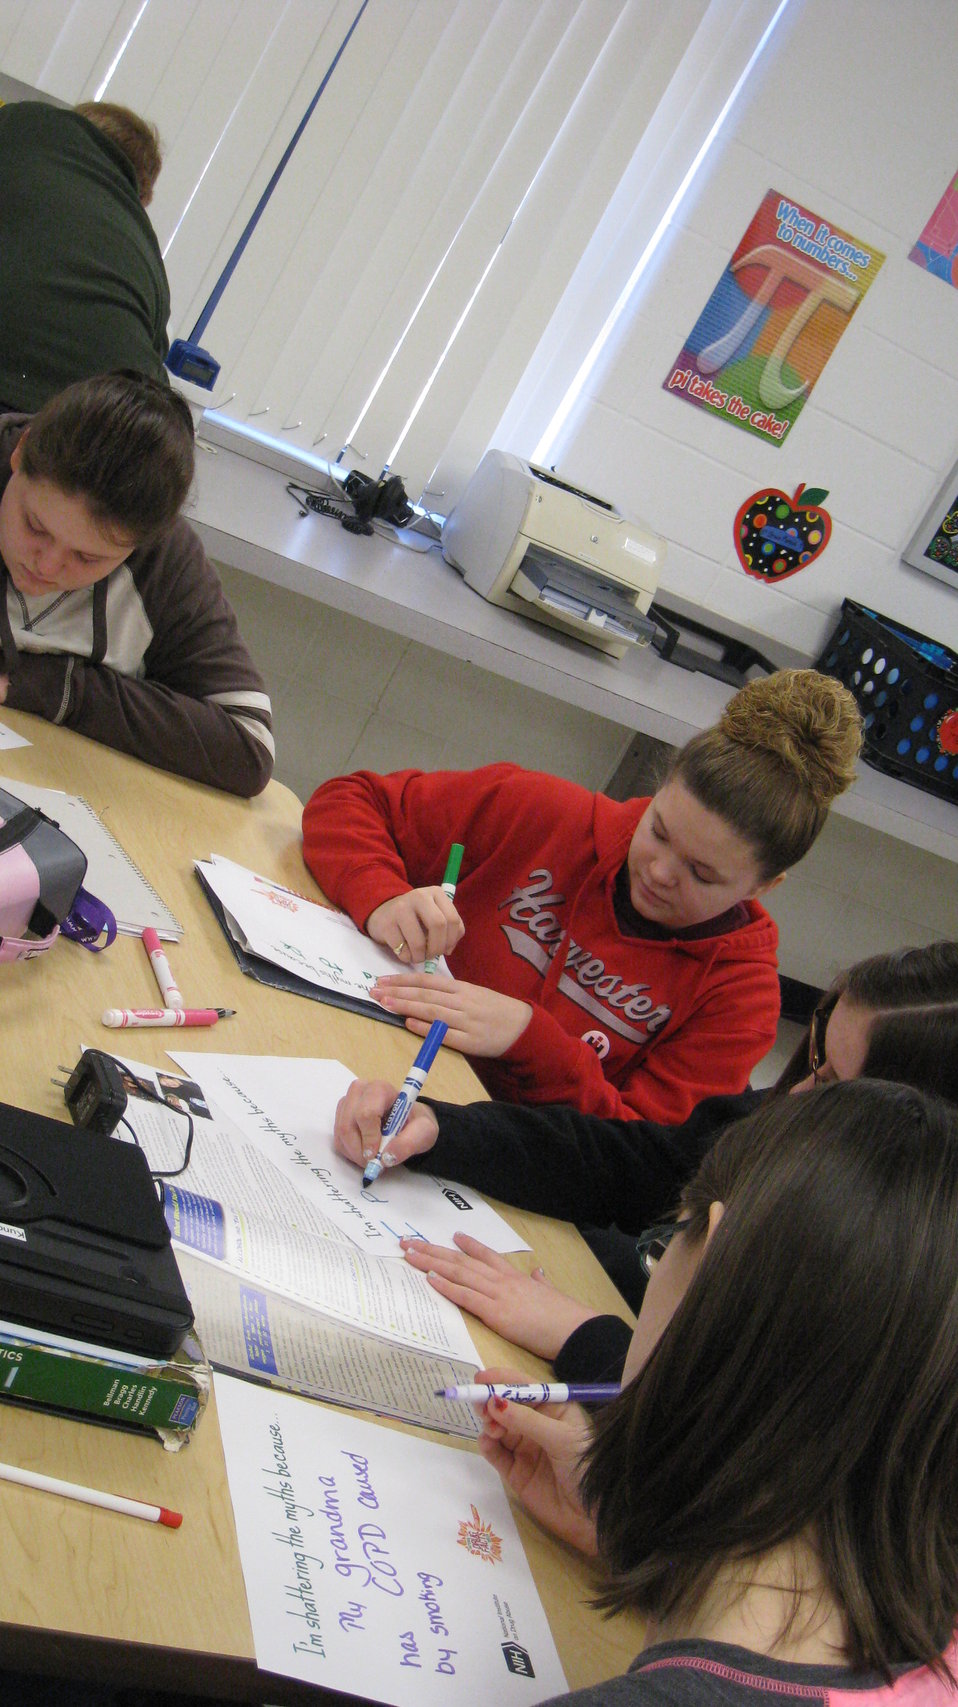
I'm Shattering the Myths Because...

Teenagers from the Van Buren County SAFE Coalition's, Youth Leadership Council (YLC) in Keosauqua, Iowa participate in various events during National Drug Facts Week, 2014.